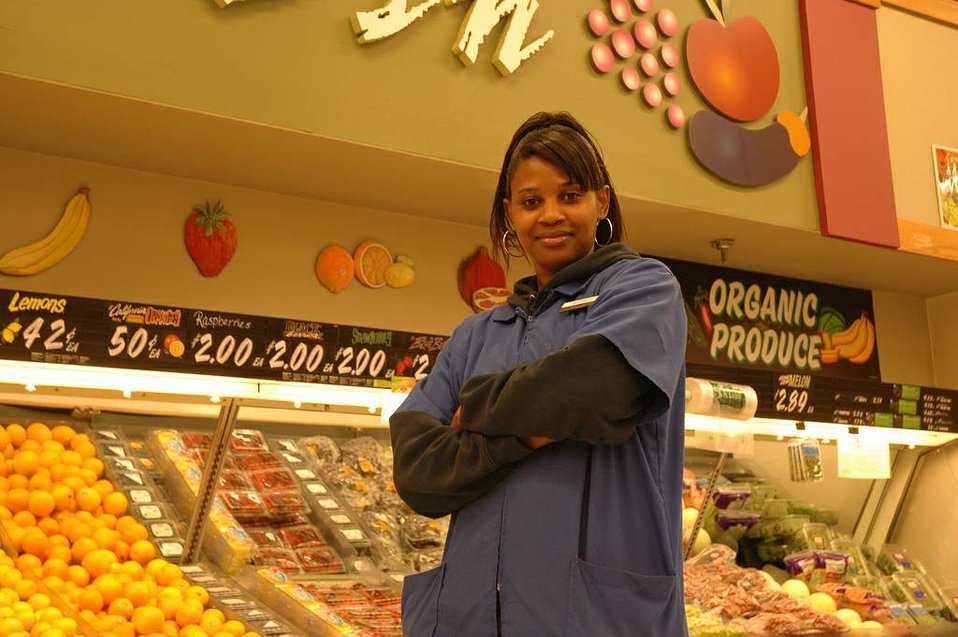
Commissary employees get training

Josephine